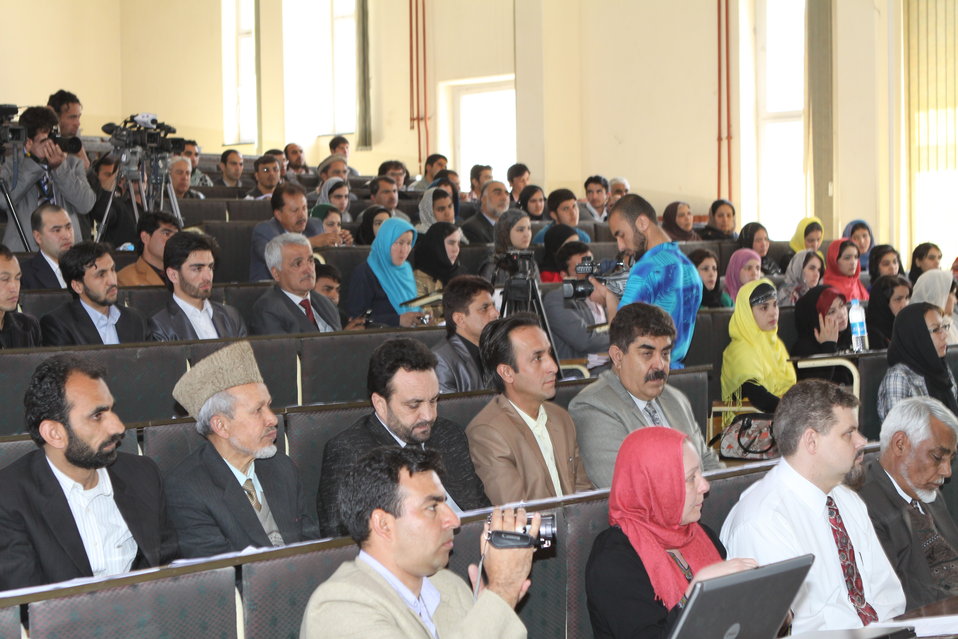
Female University Students Complete Internship

Kabul, Afghanistan | March 16, 2011 – In response to a demand for qualified Afghan engineers, Kabul University celebrated completion of an intensive five-month Mentor Protégé Training Program today by 10 female fourth year university students. The Training Program is a joint effort between the Government of the Islamic Republic of Afghanistan, the U.S. Agency for International Development (USAID), and the Universities of Kabul, Kandahar, Alberoony in Kapisa, Shiekh Zayed in Khost. The graduation ceremony highlighted collaboration with these national institutions in building the technical skills of young Afghans, made possible by USAID.

Four of the interns are engineers, while the remaining six are from the faculties of computer science, economics, and psychology.

Speaking about the event, H.E. Minister of Public Works Abdul Qudus Hamidi said, “The future of Afghanistan lies in developing the skills of our youth, and the engineering skills of these graduates today represent a small but important step forward for the country.”

Keynote speakers at the ceremony included H.E. Deputy Minister of Higher Education Abdul Rahim; USAID Senior Deputy Mission Director Robert Hellyer; and Chancellor of Kabul University Professor Hamidullah Amin. Approximately 150 people, including current and former students attended the graduation.

Launched last year, the Mentor Protégé Training Program has provided qualifying students the opportunity to intern with USAID’s Strategic Provincial Roads-South and East Afghanistan project and gain practical experience in a real work environment. The goal of the program was to offer interns the opportunity to gain hands-on experience to reinforce their formal studies. A total of 30 students from four national universities have benefitted from this program.

“The promotion of women’s rights is integrated into the overall U.S. Government development strategy and can be found in key programs, including education, healthcare, security, rule of law, political participation, agriculture, and economic development,” said Robert Hellyer. “The U.S. Government is committed to the Afghan leadership of programs that directly enhance development, particularly as it relates to women’s issues.”

This event also highlighted the learning achievements of students and emphasized the importance of hands-on internship programs. The curriculum is designed to instill students with the knowledge and confidence to qualify for engineering positions upon completion of their fourth year at their respective universities.